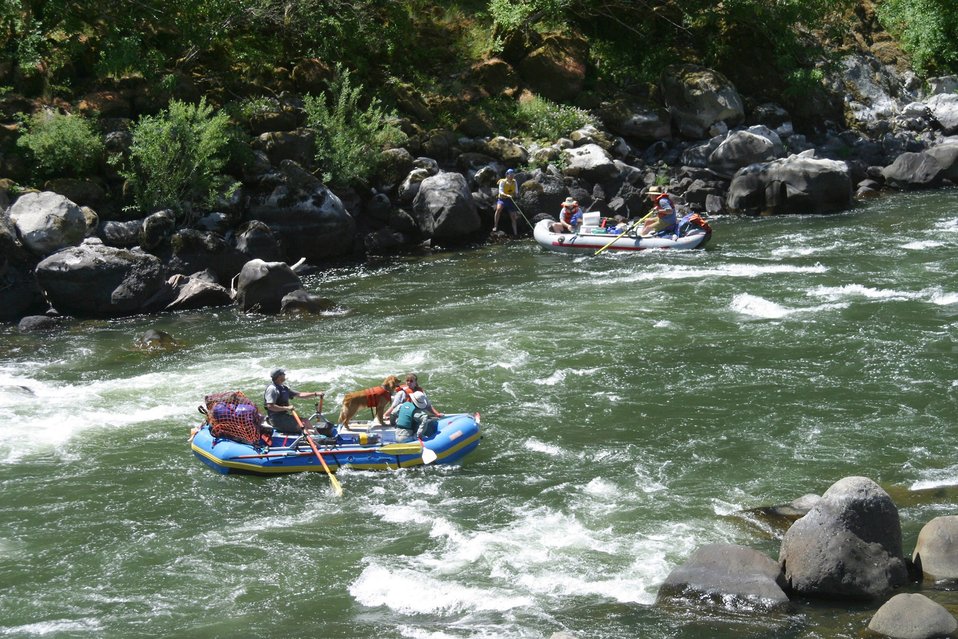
Blossom Rapids.